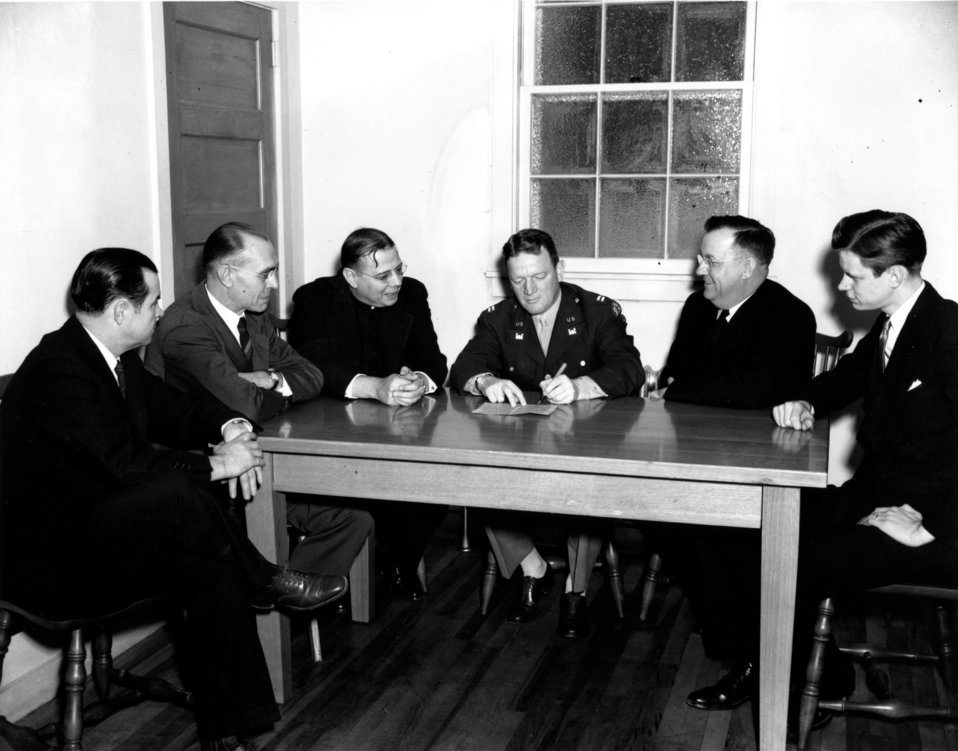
Church activity at Oak Ridge